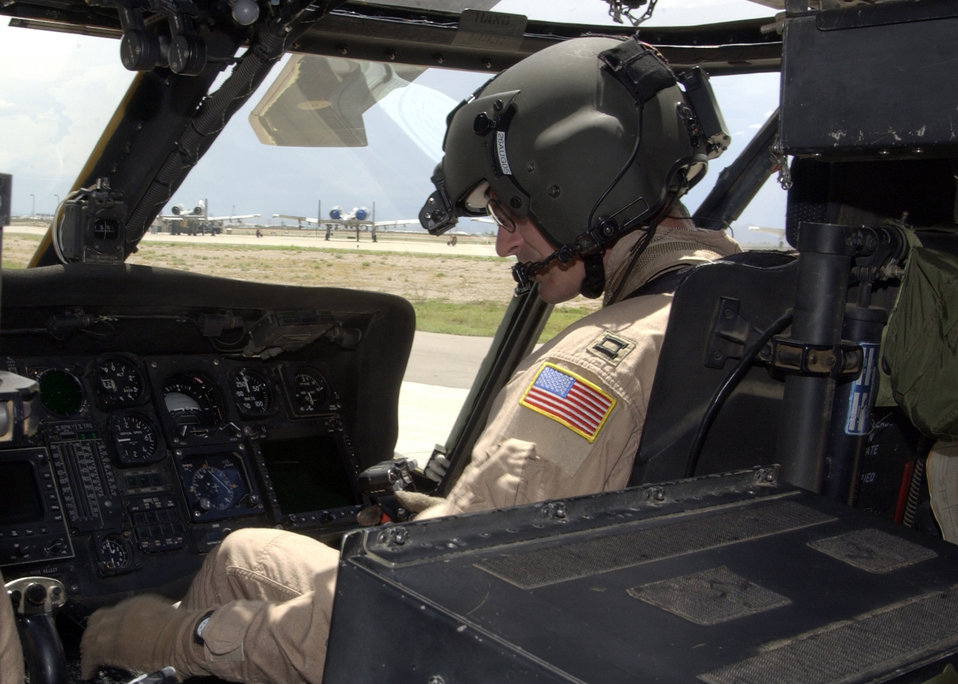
Readying for a rescue

DAVIS-MONTHAN AIR FORCE BASE, Ariz. -- Capt. Ian Kemp performs a preflight inspection on an HH-60G Pave Hawk before takeoff. He is assigned to the 55th Rescue Squadron here.